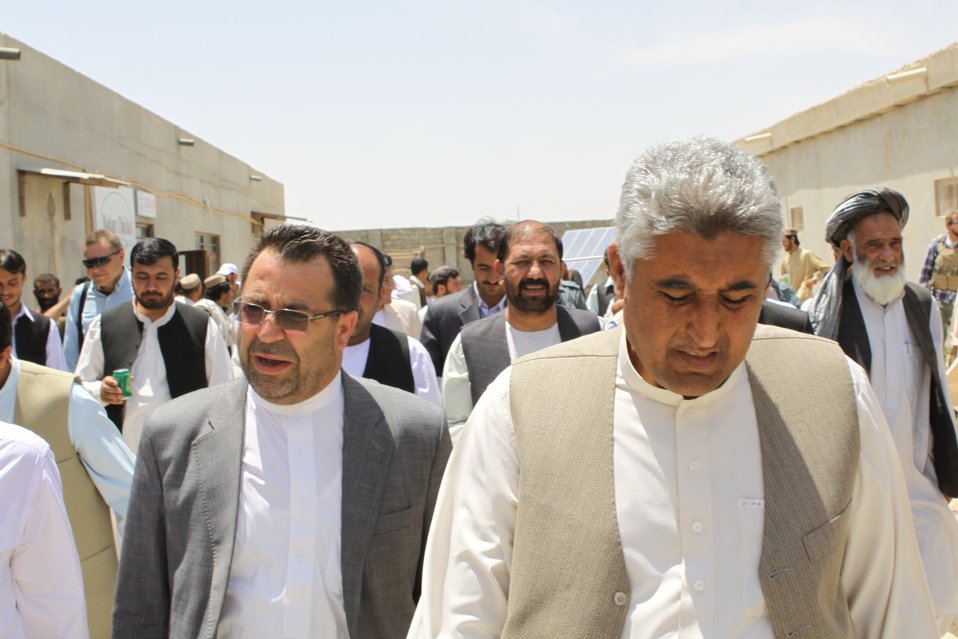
Bolan Poultry Farm